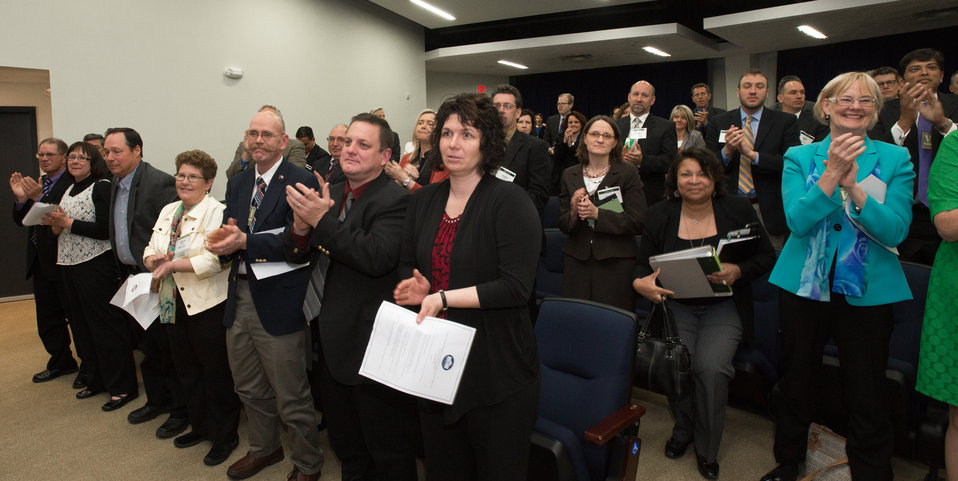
Representatives from the dairy industry applaud Agriculture Secretary Tom Vilsack and Innovation Center for U.S. Dairy Chief Executive Officer (CEO) Tom Gallagher after they sign a Memorandum of Understanding (MOU) at the Innovation Center For U.S. Dairy Sustainability Council Meeting on Wednesday, Apr. 24, 2013, at the White House, Washington, D.C. The objectives of the MOU are to increase the construction of anaerobic digesters and explore innovative ways to use products previously considered waste streams from dairy production, processing and handling.